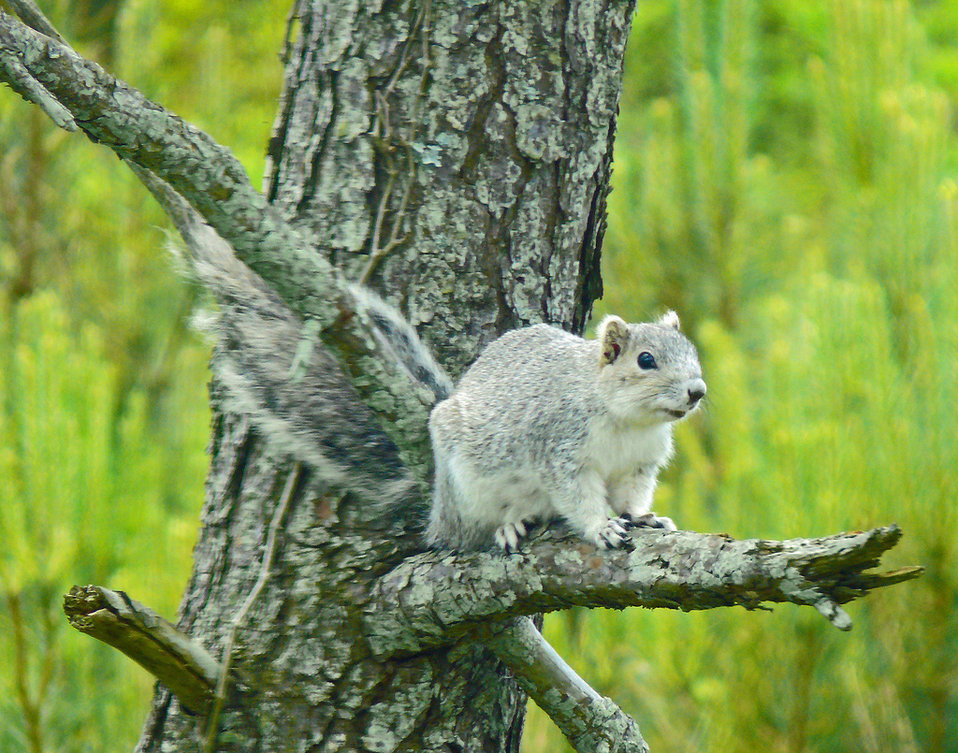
Delmarva fox squirrel

endangered
Photo: Larry Meade, Creative Commons
Chincoteague National Wildlife Refuge, VA
This endangered squirrel also occurs at MD's Blackwater and Eastern Neck National Wildlife Refuge